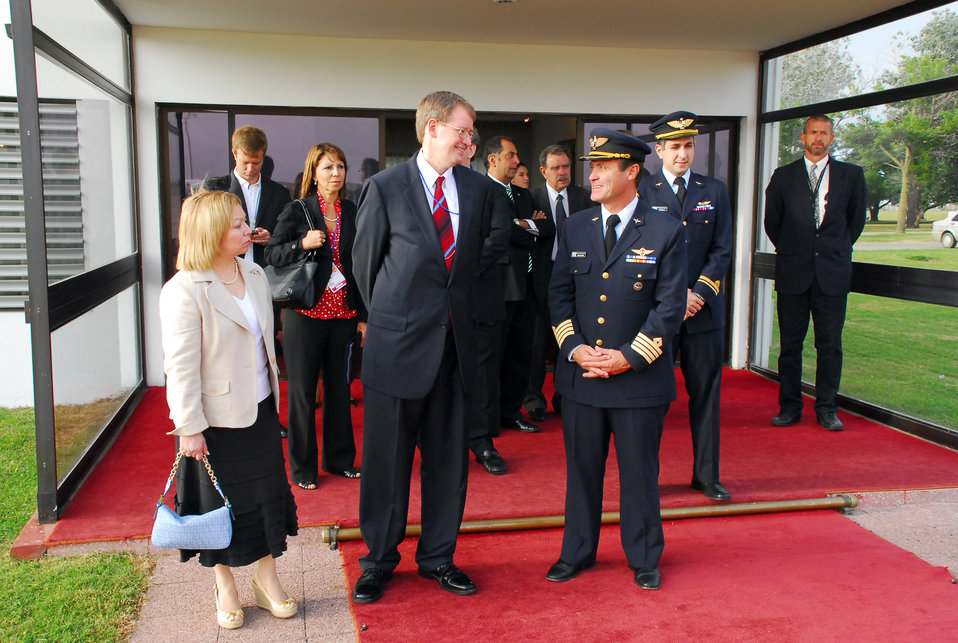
Secretary Clinton Arrives in Montevideo, Uruguay

U.S. Ambassador to Uruguay David Nelson and his wife Gloria await U.S. Secretary of State Hillary Rodham Clinton's arrival at Carrasco International Airport in in Uruguay March 1, 2010.